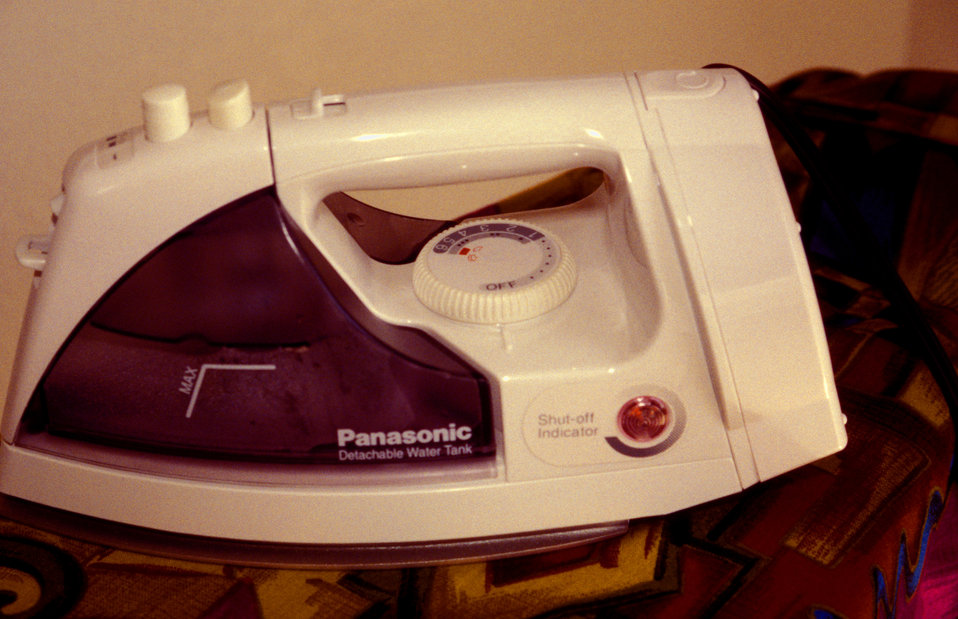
This image depicted a side-view of a typical iron, which was equipped with an automatic shutoff feature. This safety device was designed to prevent the scorching of an ironing board, or even avoid a possible house fire, which could result from someone inadvertently leaving the appliance on, and the heating element in contact with the ironing board. This added feature would not only act to make the users activity a safer experience, but would also act to save on energy usage, as well as mere peace of mind. 'The Center for Universal Design (CUD) is a national research, information, and technical assistance center that evaluates, develops, and promotes accessible and universal design in housing, buildings, outdoor and urban settings and related products.'